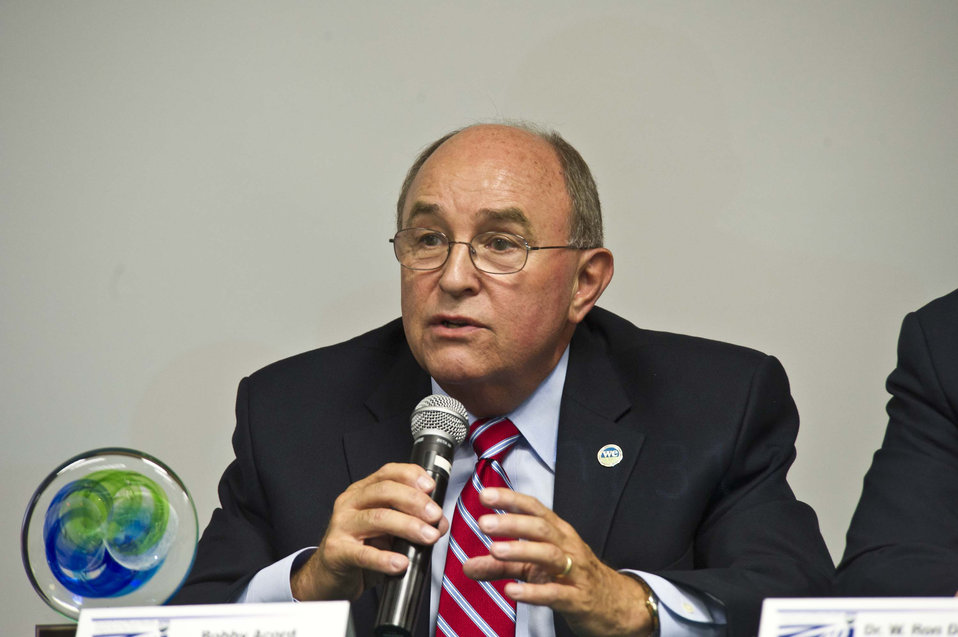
Former U.S. Department of Agriculture (USDA) Animal and Plant Health Inspection Service (APHIS) Administrator Bobby Accord (2001-2004) shares his experiences as APHIS Administrator during a question and answer session at the celebration of the Agency’s founding in 1972 on May 16, 2012.